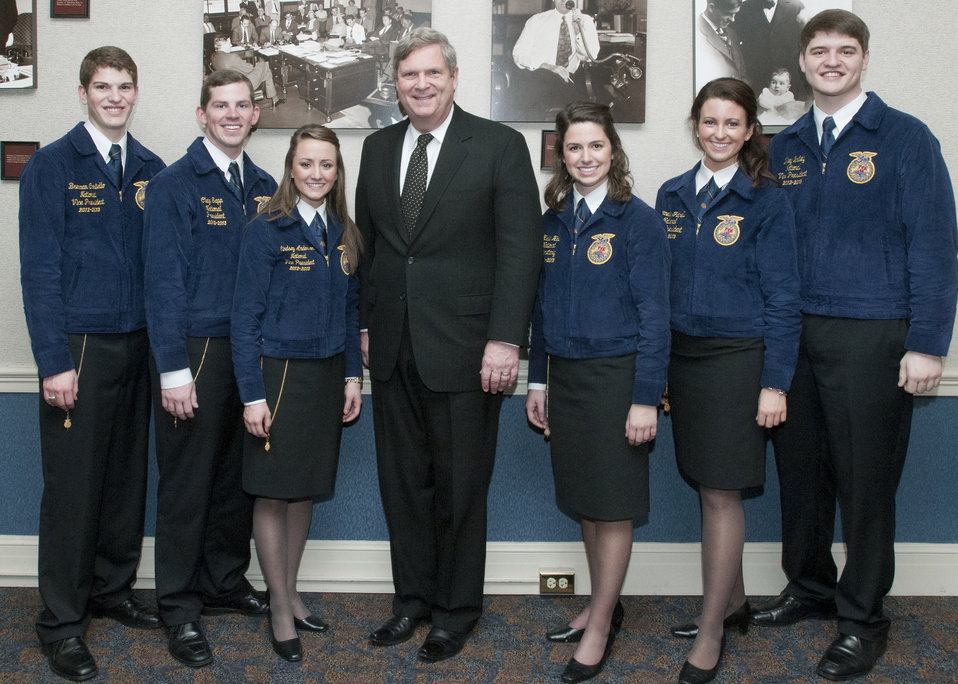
Agriculture Secretary Tom Vilsack meets with FFA officers in the Wallace room at the U.S. Department of Agriculture (USDA) in Washington, D.C., on Wednesday, Jan. 16, 2013. (L to R, FFA National Central Region Vice President Brennan Costello, FFA National President Clay Sapp, FFA National Western Region Vice President Lindsey Anderson, Agriculture Secretary Tom Vilsack, FFA National Secretary Kalie Hall, FFA National Eastern Region Vice President Joenelle Futrell, and FFA National Southern Region Vice President Wiley Bailey).